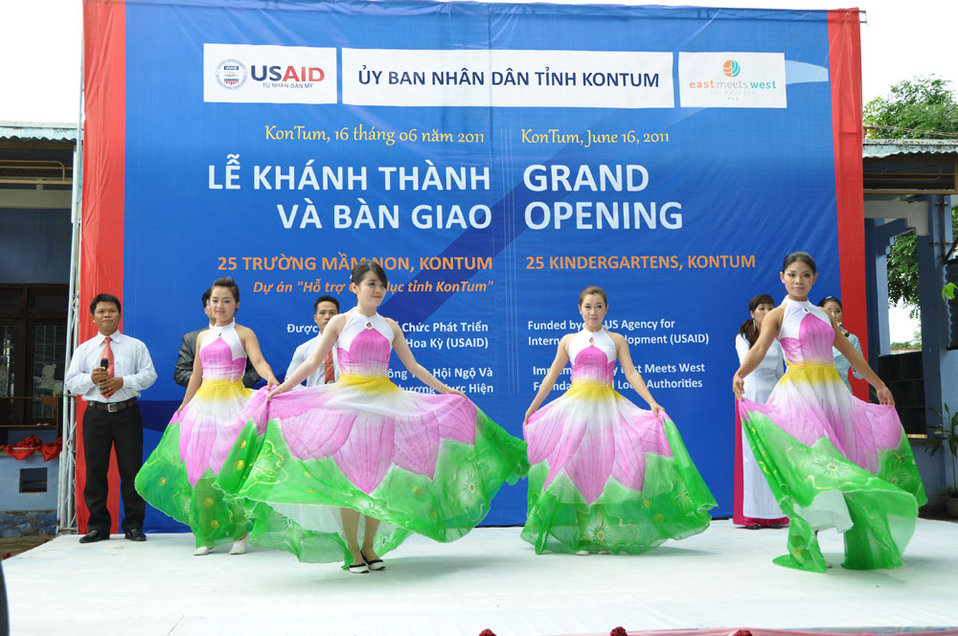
Singers and dancers perform at a kindergarten hand-over ceremony in Kon Tum.